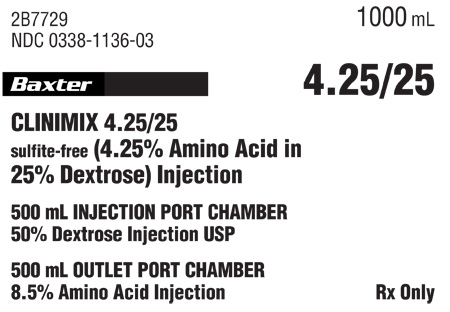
RECALLED – Baxter Clinimix

January 3, 2013 – Product Recall – Baxter Initiates Nationwide Voluntary recall Of Select Lots of Premix Parenteral Nutrition .